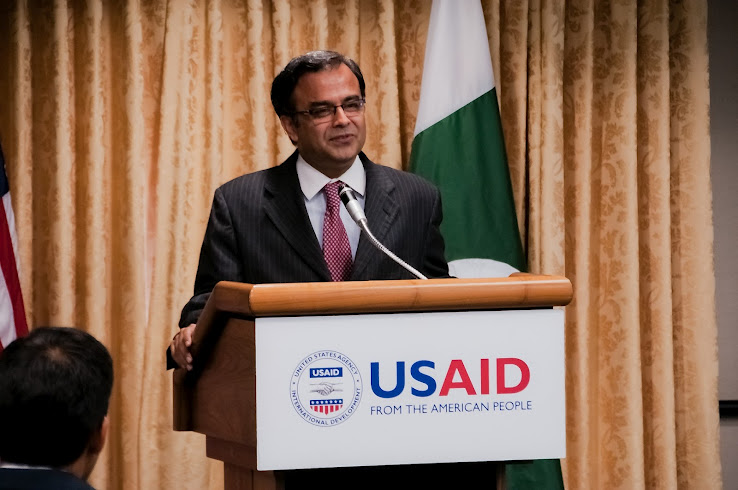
Dr. Asad Majeed Khan

WASHINGTON, D.C. – This week, Jonathan Conly was sworn in as the new U.S. Agency for International Development (USAID) Country Director for Pakistan. USAID Administrator Dr. Rajiv Shah presided over the ceremony and administered the oath in the presence of Mr. Conly’s family, friends, and colleagues, as well as members of the Pakistani-American community and the Pakistan Embassy’s Deputy Chief of Mission, Dr. Asad Majeed Khan.